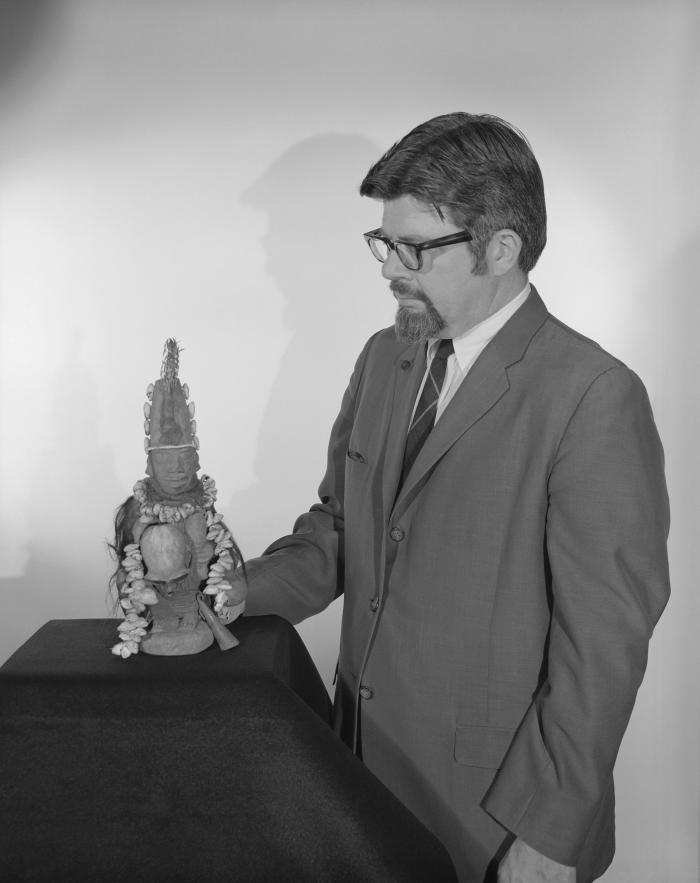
This 1968 photograph depicted former Centers for Disease Control, CDC, epidemiologist, and one of the former directors of the Global Smallpox Eradication Program 1966 - 1970, J. Donald Millar, M.D., D.T.P.H., standing next to a scultural representation of the Yoruban deity Shapona, the spiritual intermediary between man and God.